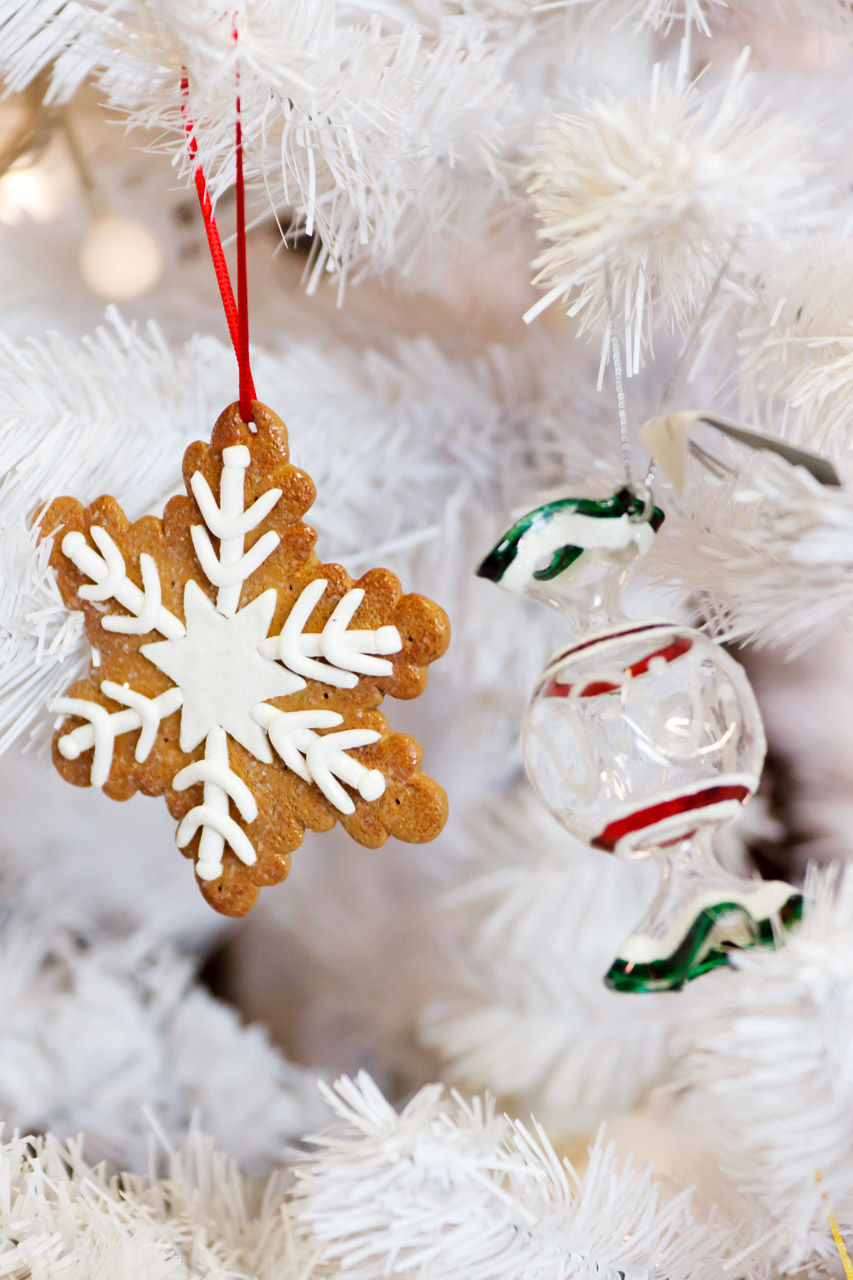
White christmas decoration

Christmas decorations hanging on white christmas tree.